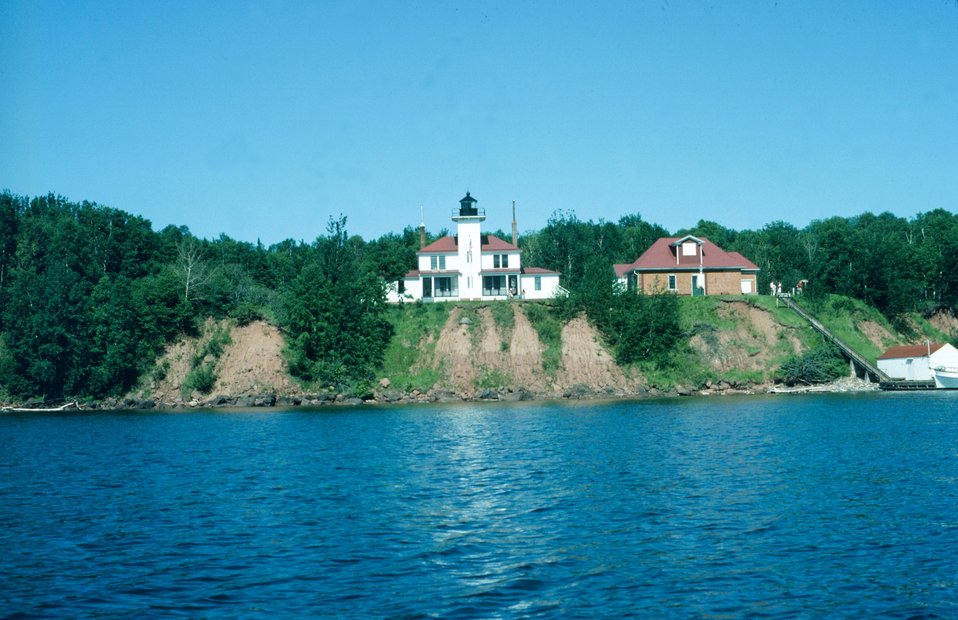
Raspberry Lighthouse in the Apostle Islands